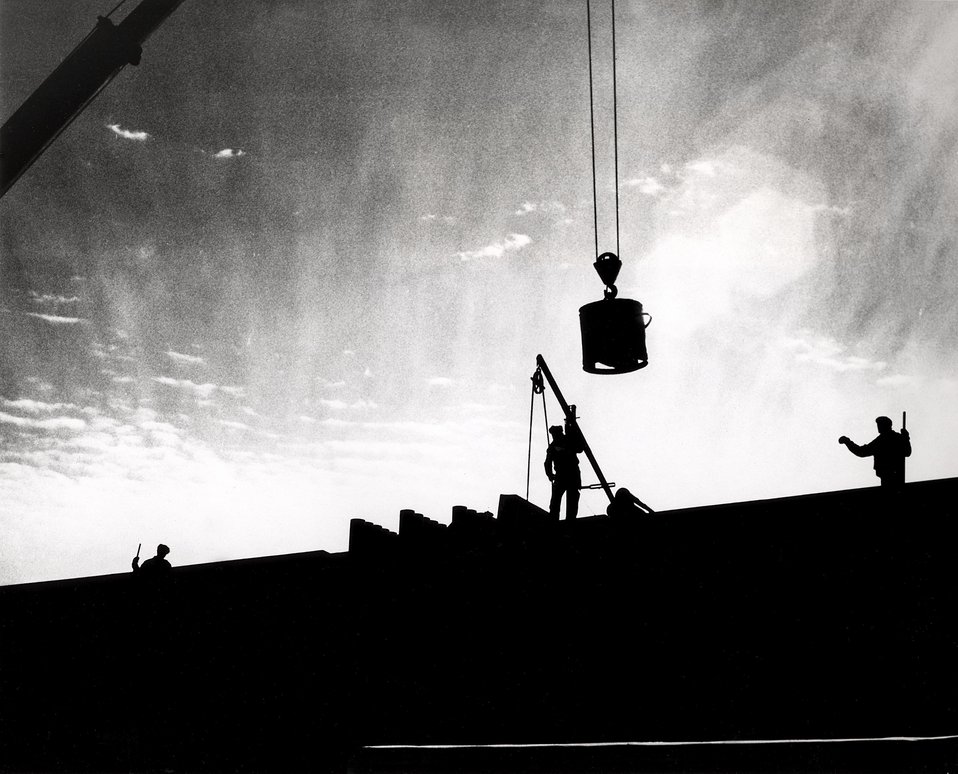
Construction is progress on an addition to the Applied Physics building at Argonne.
c.1970